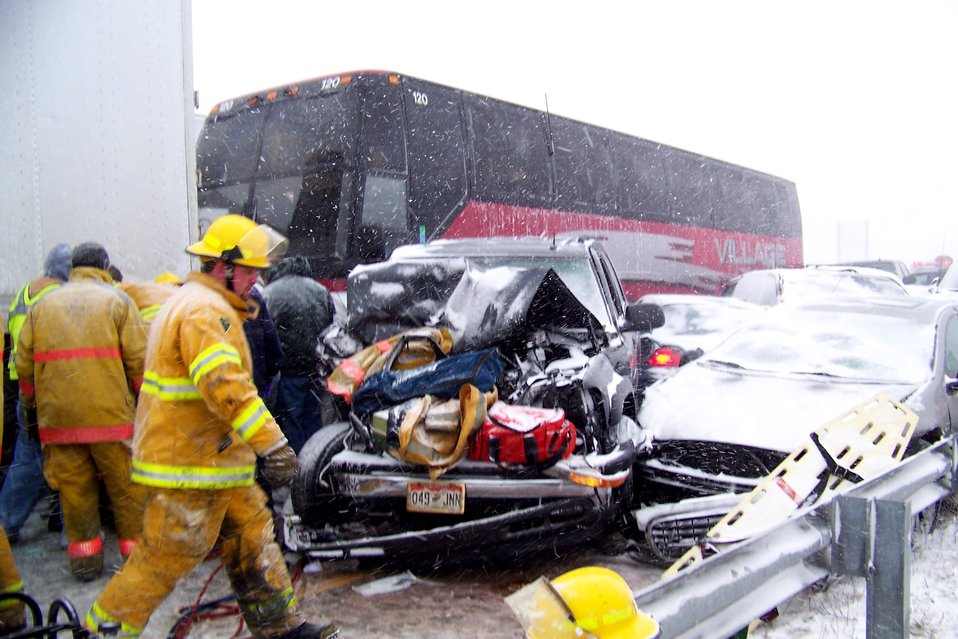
Air Force nurses helps save lives in rural Kansas

Kansas rescue crews and Maj. Randy McBay worked more than eight hours Dec. 22 to save lives and clean-up during a fatal accident that occurred in a snow blizzard near Topeka, Kan.